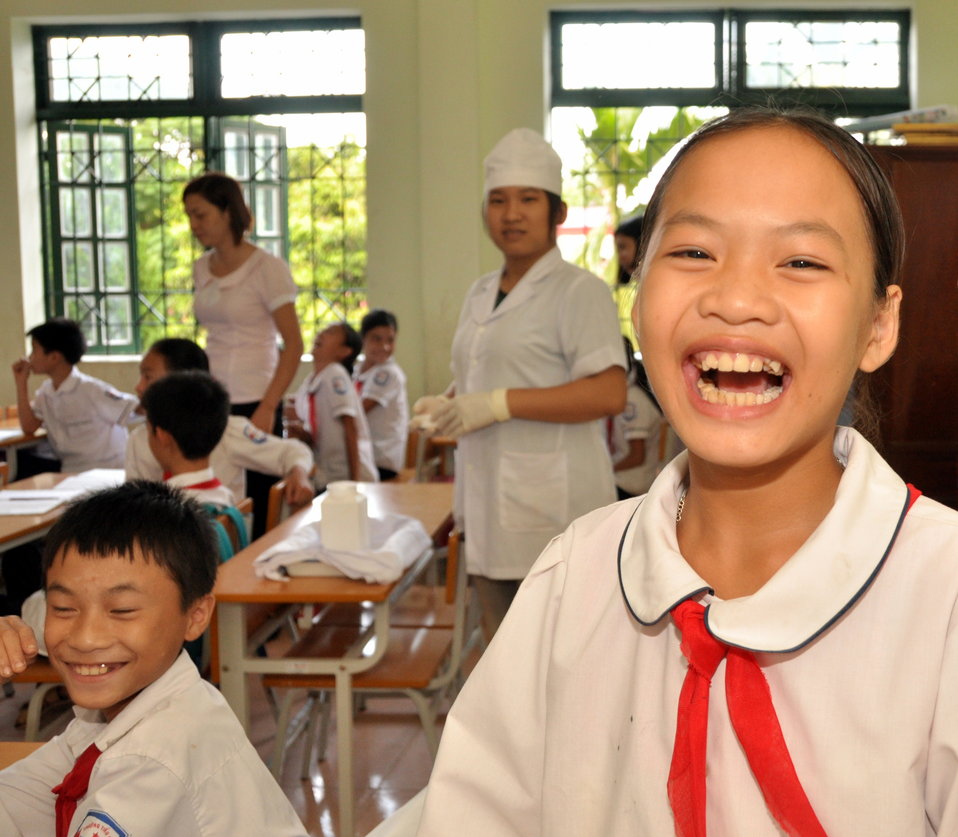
School children receive a dose of deworming medicine in Dien Bien